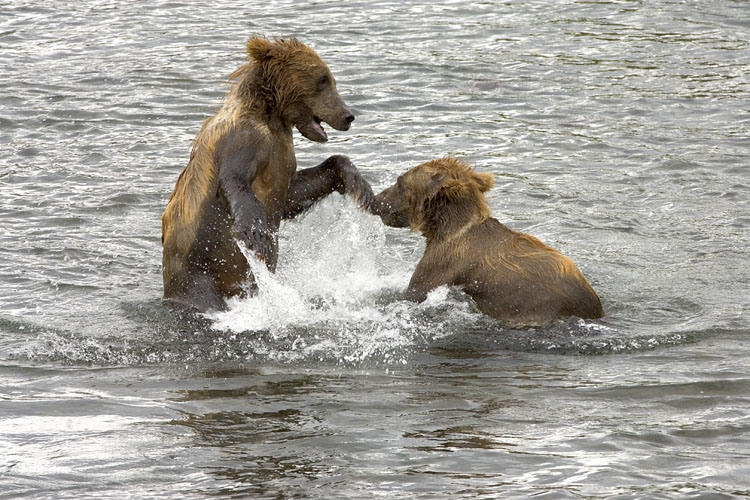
Kodiak Brown Bears

Playful Kodiak Bears